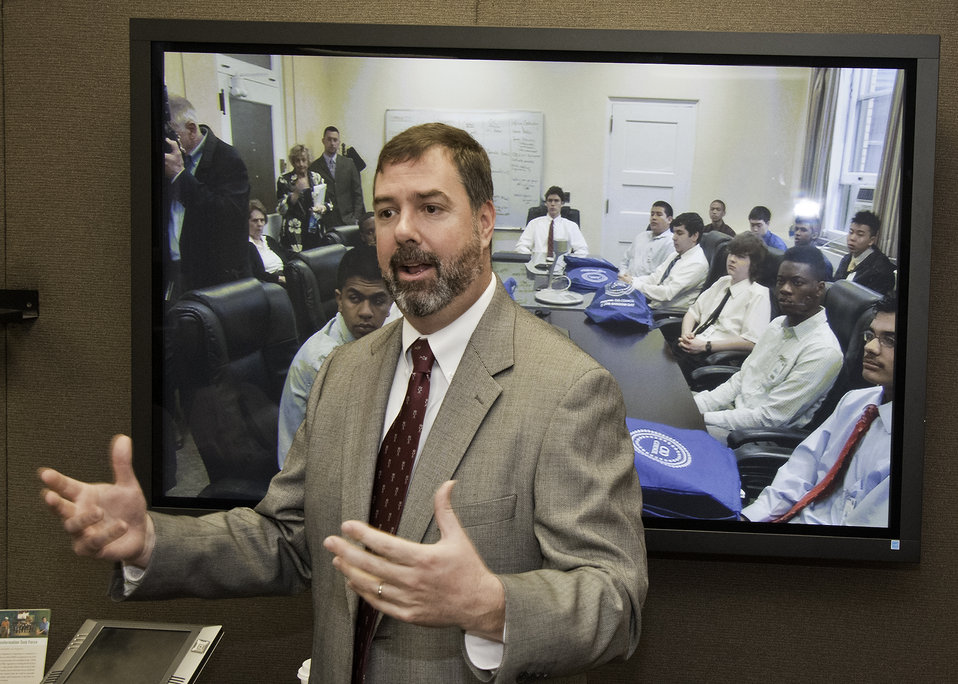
Chris Smith, Chief Information Officer welcomes Students from the Springbrook High School, Academy of Information Technology in Silver Spring, Maryland that visited the United States Department of Agriculture (USDA) on Wednesday, April 13, 2011. USDA holds an Information Technology Job Shadow Day annually. It is an opportunity for students from local high schools to learn the breadth and depth of information technology at USDA and how it is applied the department.